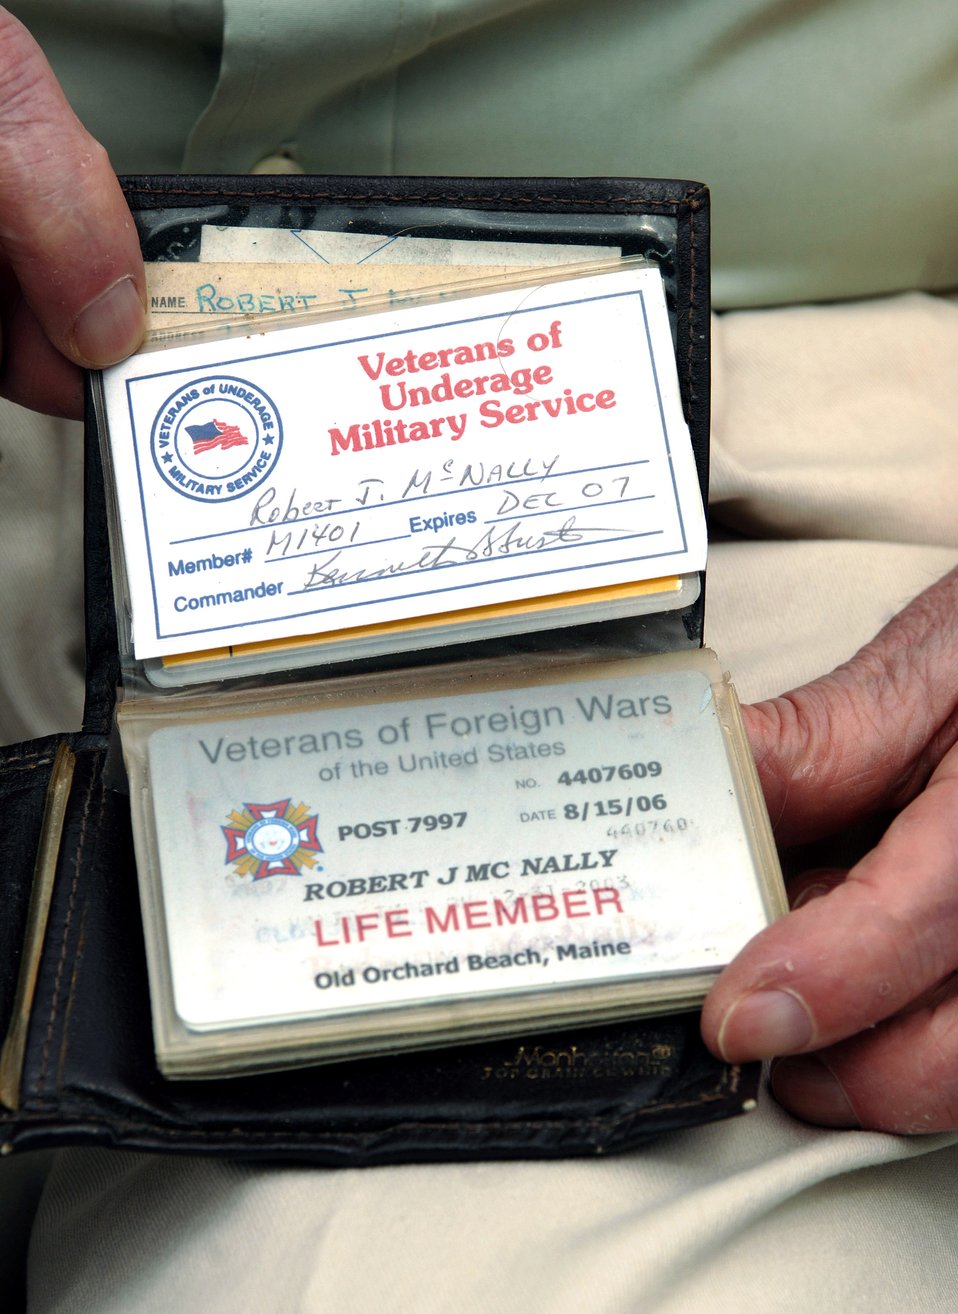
Army Air Corps veteran talks about war experience at air show

World War II veteran Robert McNally shows off his Veterans of Underage Military Service card, which he earned by enlisting for WWII while only 16 years old Aug. 19 at Pease Air National Guard Base at Portsmouth, N.H. Mr. McNally, 81, was a guest attending the 2007 Wings of Hope Air Show with hopes of being reunited with old friends. The 2007 Wings of Hope Air Show at Pease ANGB is in conjunction with Air Force Week New England.